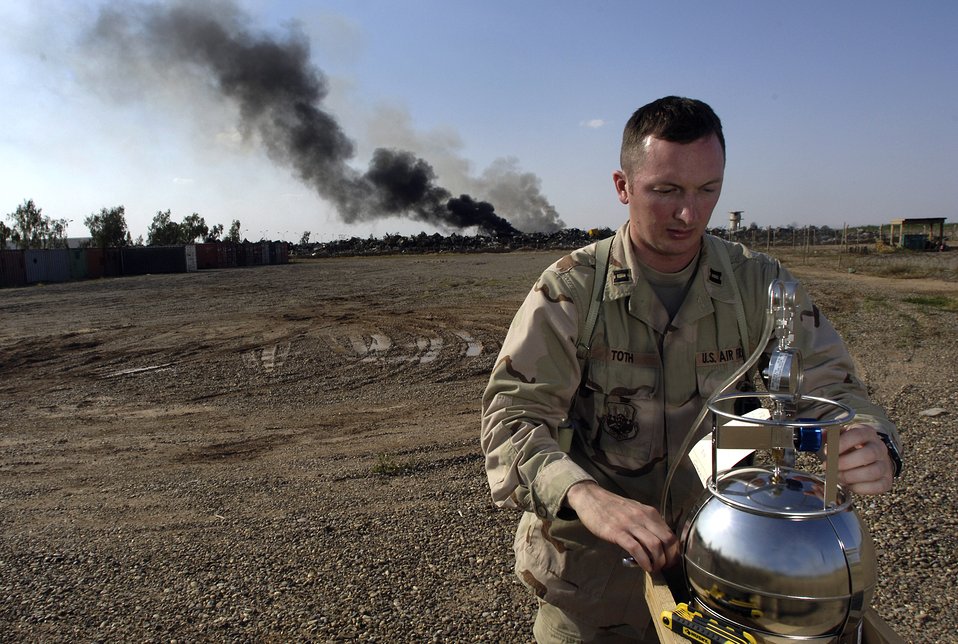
Bioenvironmental engineers keep Airmen safe

Capt. Charles Toth checks a monitoring device April 13 at Balad Air Base, Iraq, for common pesticides and other environmental hazardous chemicals in the air. Captain Toth is the bioenvironmental engineer flight commander. Bioenvironmental engineers perform environmental, occupational and radiological surveillance in order to protect and maintain a healthy work force, and they serve as mission enhancers during emergency management response operations.